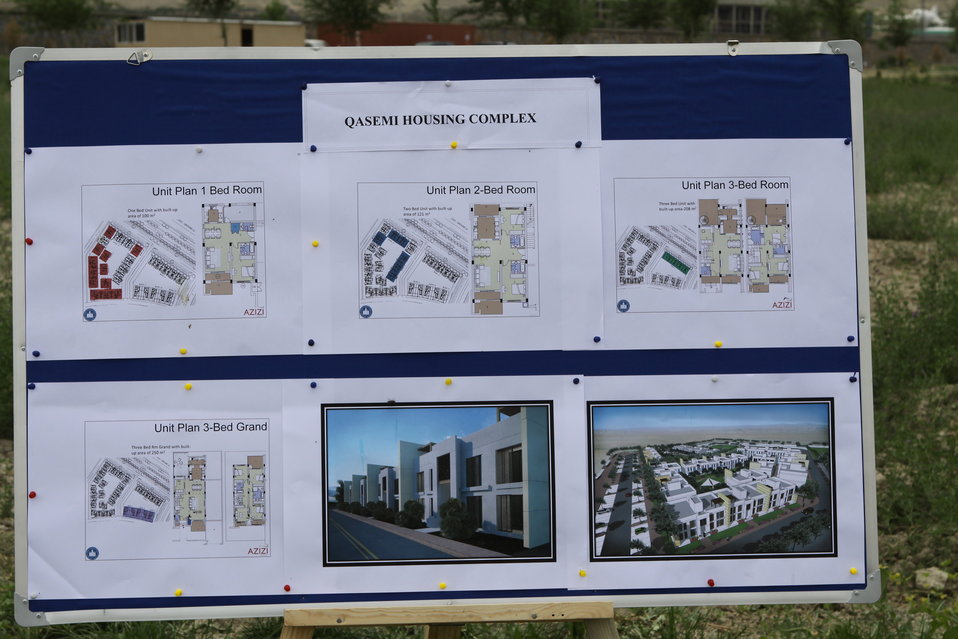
100526 AUAF Graduation 399